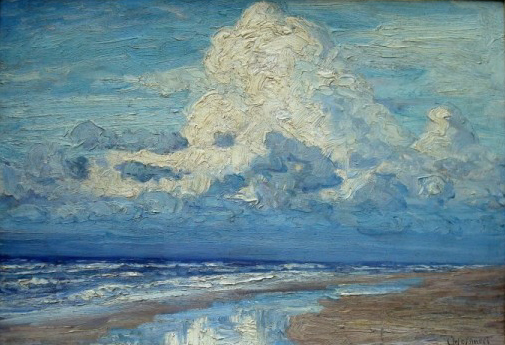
'Am einsamen Strande' (Ostsee), um 1910, Öl auf Karton, 49,5 x 70,5 cm